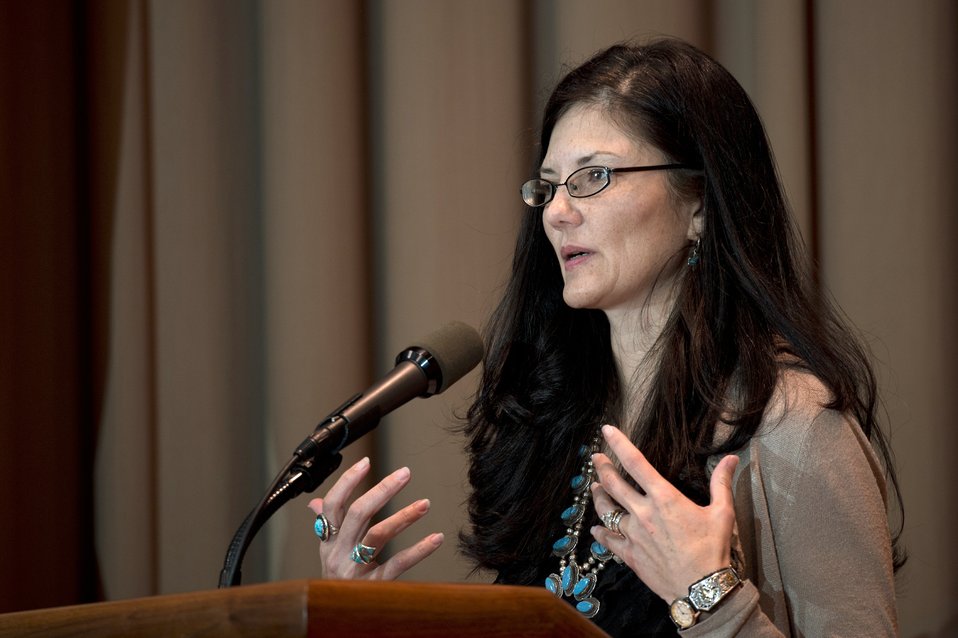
U.S. Department of Agriculture (USDA), Natural Resources Conservation Service (NRCS), Washington Public Affairs Officer and AIANEA President Gina Kerzman makes remarks at the 2013 American Indian and Alaska Native Heritage Observance at the U.S. Department of Agriculture (USDA) on Thursday, Nov. 14, 2013 in Washington, D.C. The theme of this year’s event was “Guiding Our Destiny with Heritage and Traditions.”